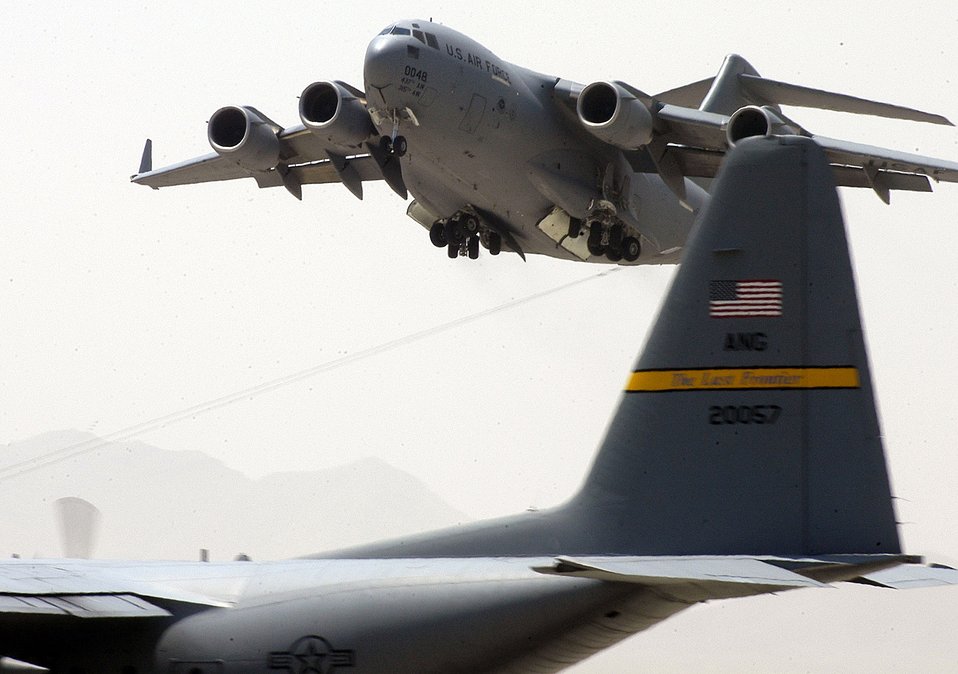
Airlift at Bagram

A C-17 Globemaster III from Charleston Air Force Base, S.C., takes off from Bagram Air Base, Afghanistan while a C-130 Hercules from the Alaska Air National Guard waits to take the runway. Strategic and tactical airlift are the backbone of the logistics efforts for Operations Enduring Freedom and Iraqi Freedom.